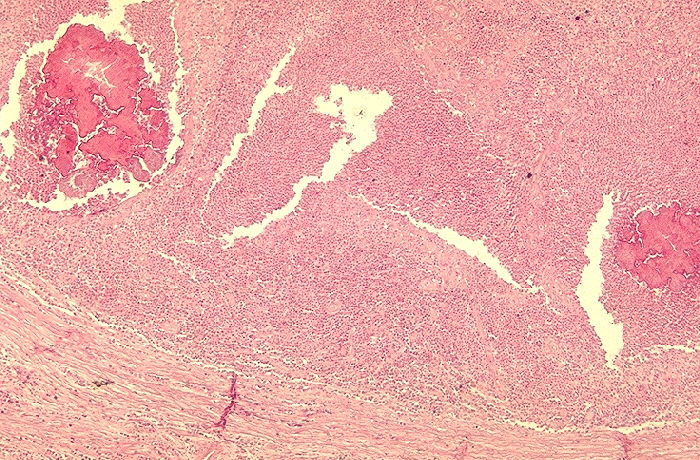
Histopathology of botryomycosis, foot.